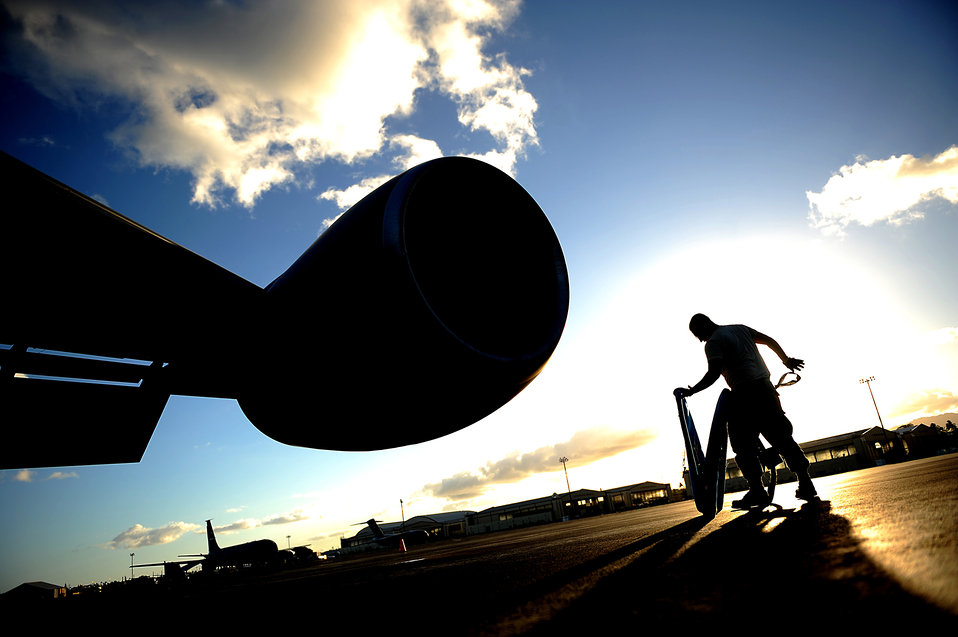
Day's work is done

Senior Airman Jonathan Ordonez prepares to cover a KC-135 Stratotanker engine after a refueling mission July 8, 2010, during the Rim of the Pacific 2010 exercise at Hickam Air Force Base, Hawaii. The exercise includes 14 nations, 34 ships, five submarines, about 100 aircraft and more than 20,000 participants. Airmen Ordonez is a crew chief with the 507th Aerial Maintenance Squadron at Tinker AFB, Okla.